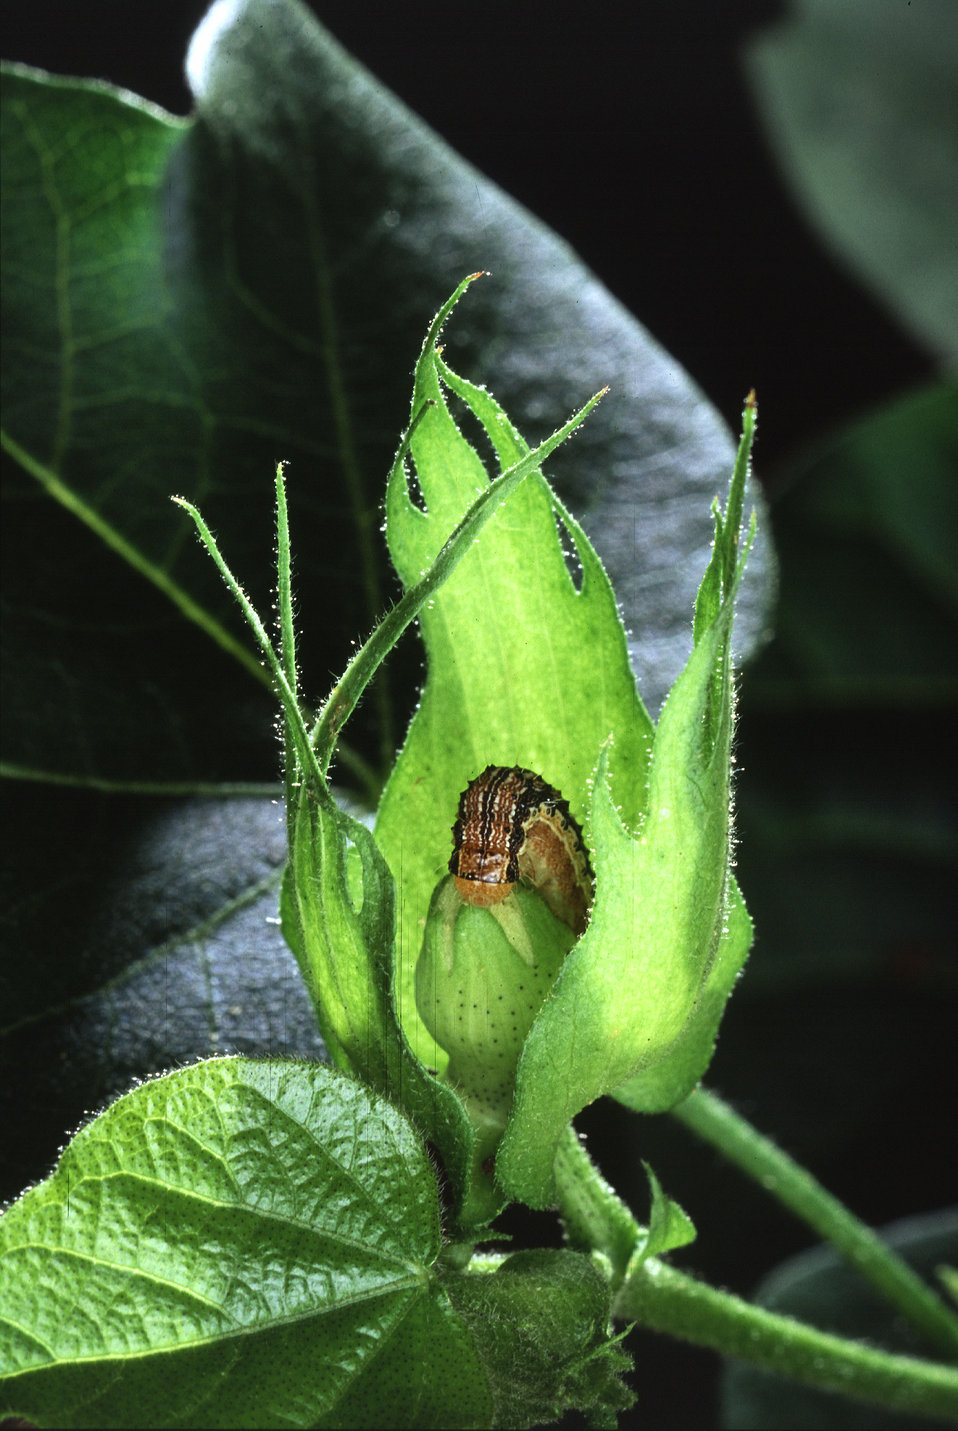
Costly crop pests like this cotton bollworm may soon encounter a new biological control. The celery looper virus is being tested by the U.S. Department of Agriculture (USDA) Agricultural Research Service (ARS) and a commercial laboratory.